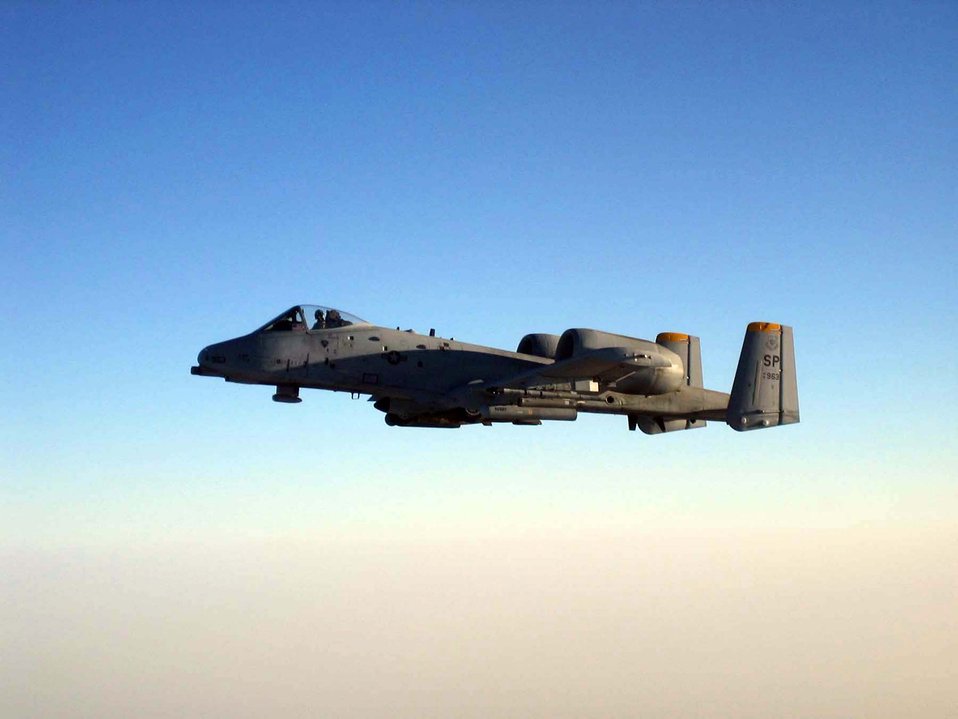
Bagram A-10s surge for summer offensives

An A-10 deployed to the 455th Air Expeditionary Wing at Bagram Airfield, Afghanistan, from Spangdahlem Air Base, Germany, flies a combat sortie over Afghanistan in support of Operation Enduring Freedom. A-10s are deployed to Bagram from Spangdahlem and Whiteman Air Force Base, Mo., and are flying close-air-support missions for U.S. and coalition forces on the ground.